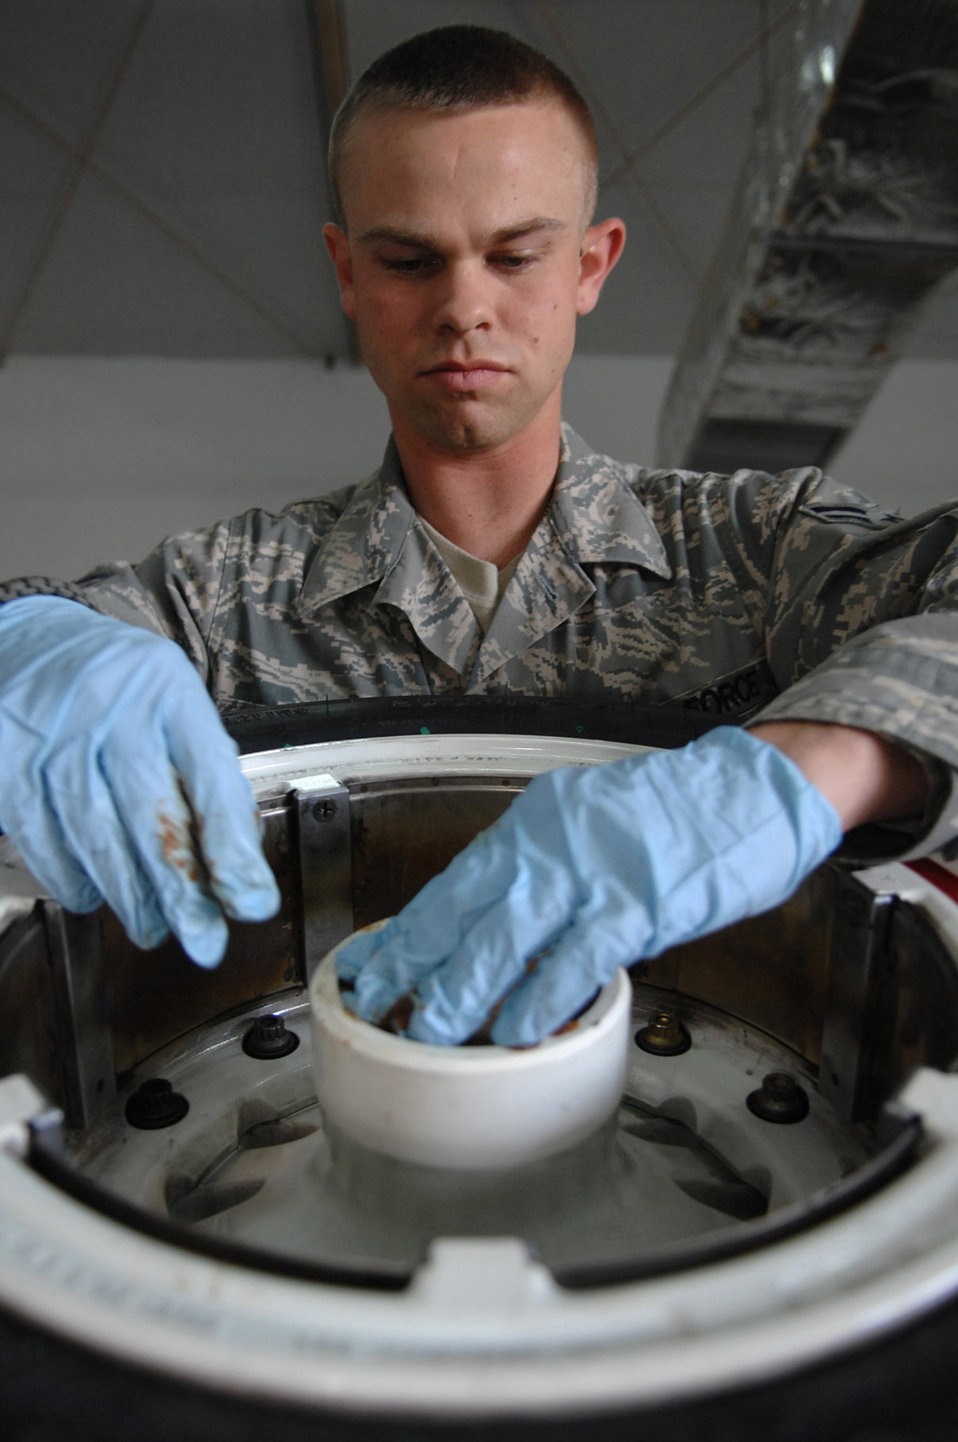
The wheels on the plane

Airman 1st Class Jared Hollers replaces retaining rings on an F-16 Fighting Falcon's main landing gear wheel at Balad Air Base, Iraq. The rings allow the wheels to roll smoothly and must be changed after every 15 missions during combat operations. Airman Hollers is a 332nd Expeditionary Maintenance Squadron crew chief deployed from Hill Air Force Base, Utah.